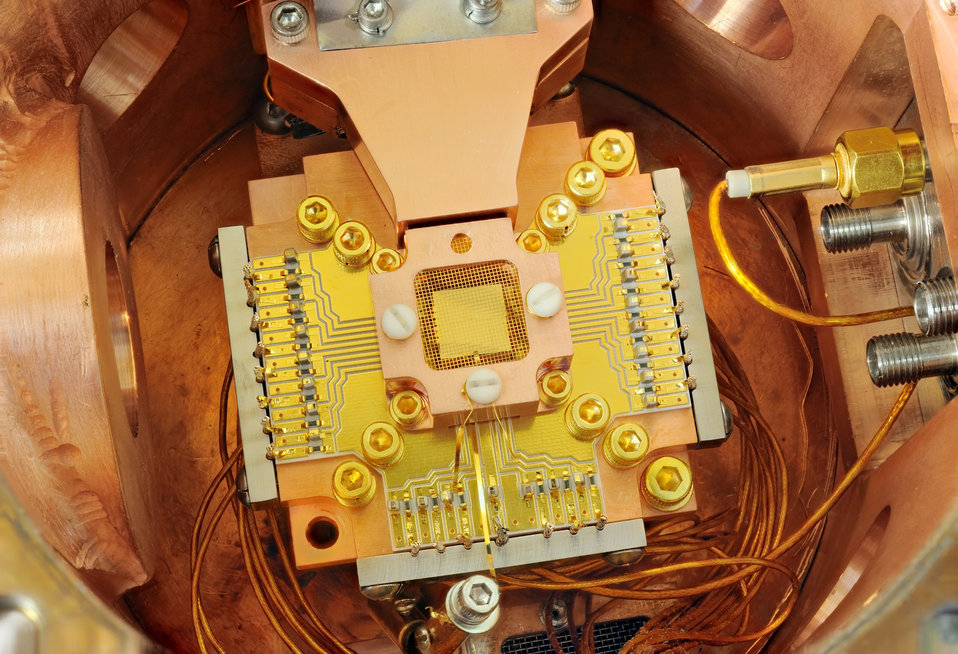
Quantum Computing; Ion Trapping

NIST physicists used this apparatus to coax two beryllium ions (electrically charged atoms) into swapping the smallest measurable units of energy back and forth, a technique that may simplify information processing in a quantum computer. The ions are trapped about 40 micrometers apart above the square gold chip in the center. The chip is surrounded by a copper enclosure and gold wire mesh to prevent buildup of static charge.